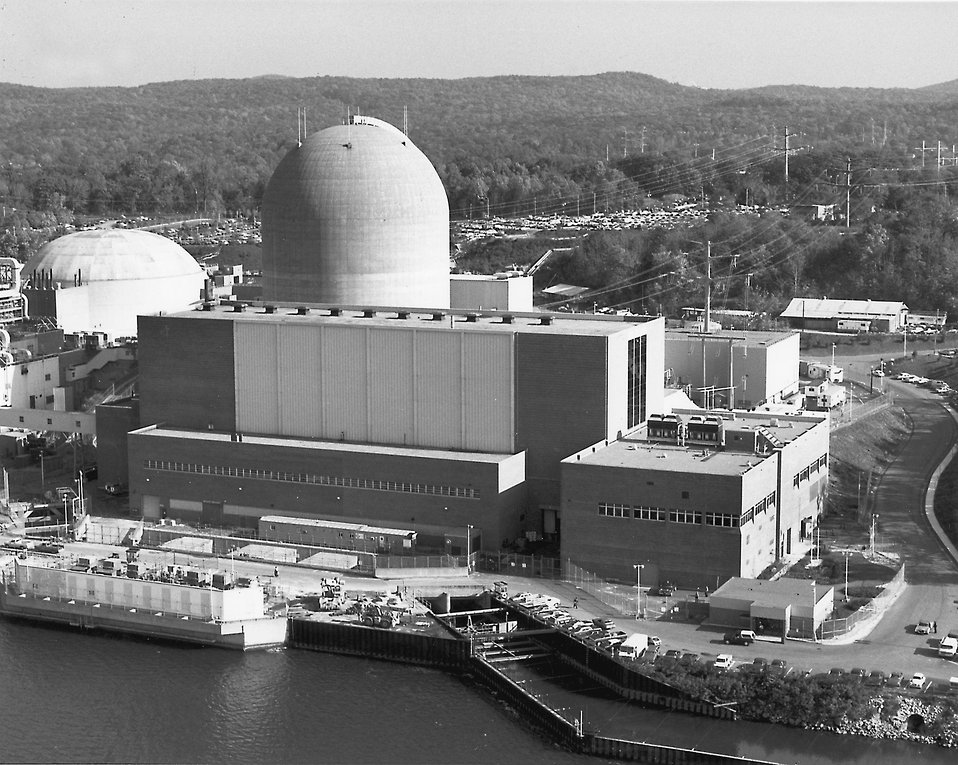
Power Auth- NY